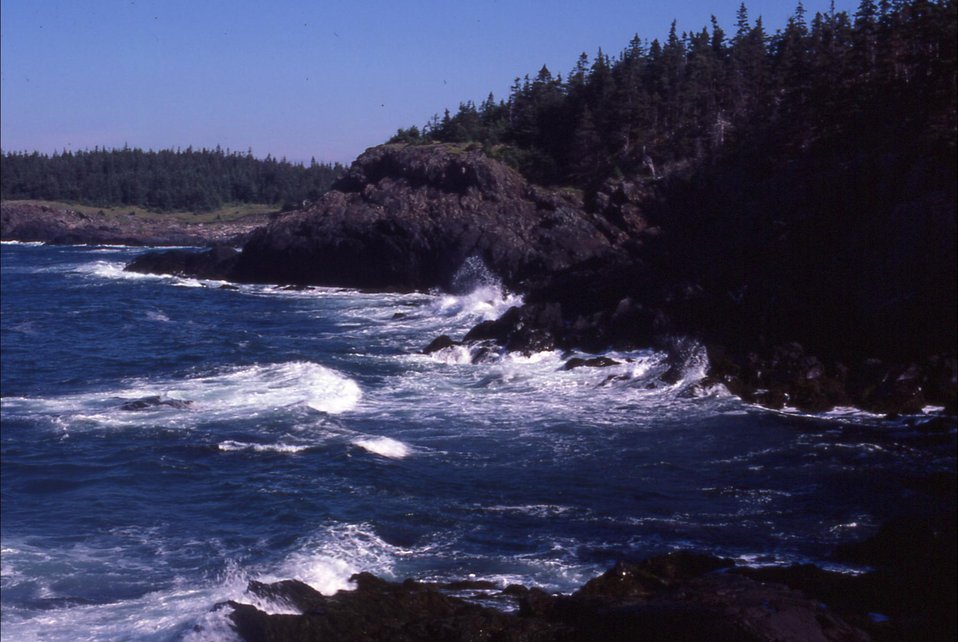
Cross Island, ME - rugged shore